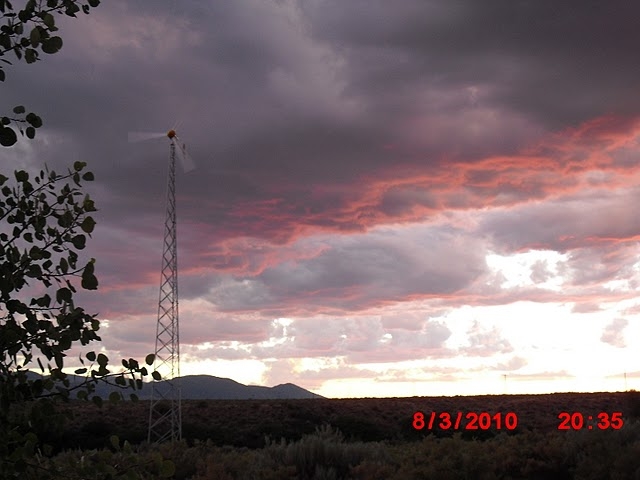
Wind Turbine at Browns Park National Wildlife Refuge

10 Kilowatt wind turbine serving the Headquarters building at Browns Park National Wildlife Refuge in Colorado.